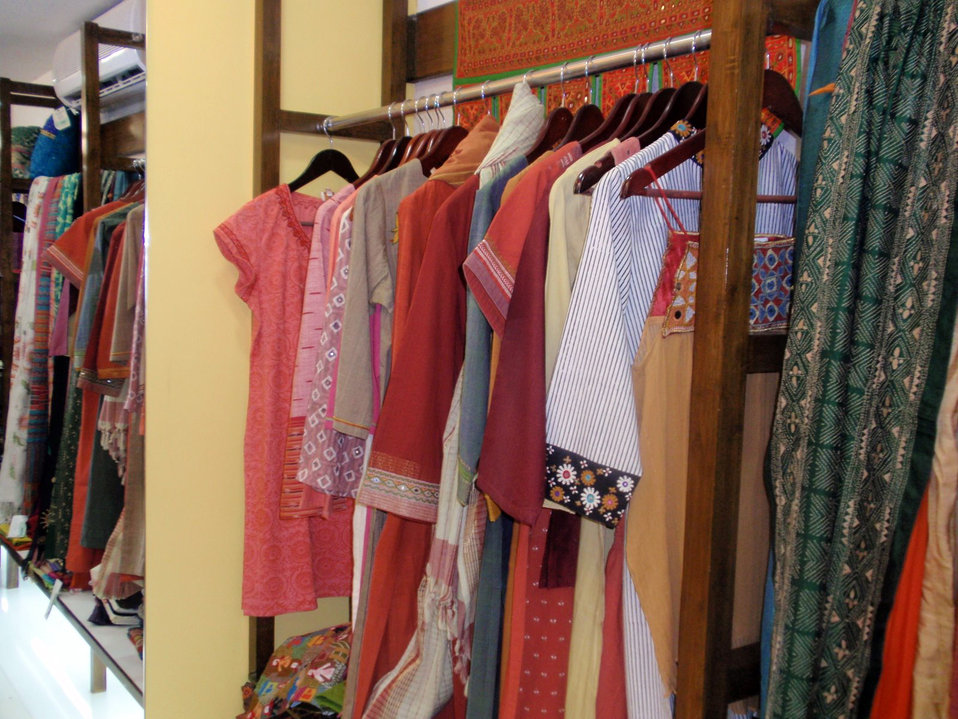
Behind the Scenes: SEWA Hansiba Store

Products at the SEWA (Self Employed Women's Association) store where U.S. Secretary of State toured while visiting Mumbai, India July 18, 2009.